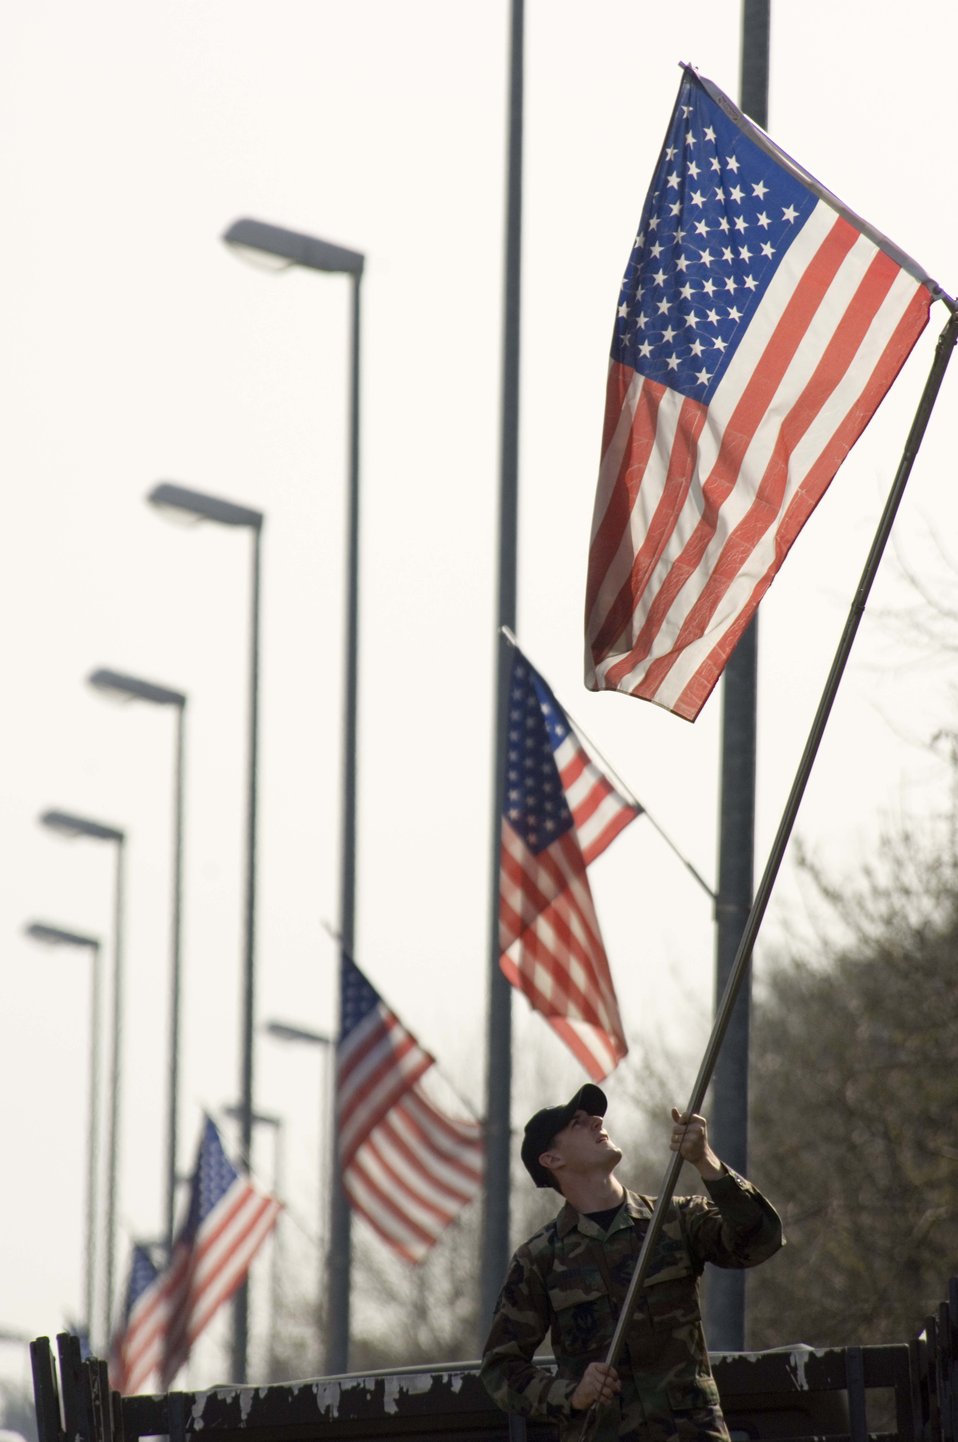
Posting the colors

Senior Airman Shawn Duffy posts a new flag on the main drive at Ramstein Air Base, Germany, on Wednesday, April 19, 2006. Officials replace older flags periodically as part of the installation excellence program. Airman Duffy is a land and mobile radio technician with the 435th Communication Squadron.